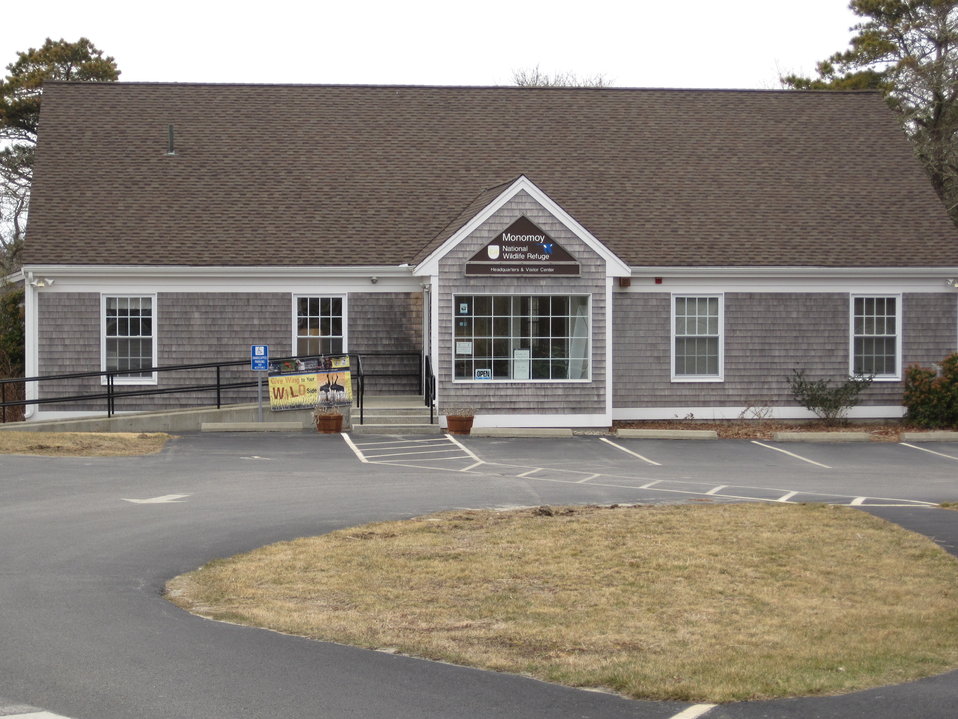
Monomoy National Wildlife Refuge Headquarters

Headquarters building for the Monomoy National Wildlife Refuge.

Credit: Keith Shannon/USFWS

Monomoy National Wildlife Refuge is part of the Eastern Massachusetts National Wildlife Refuge Complex.